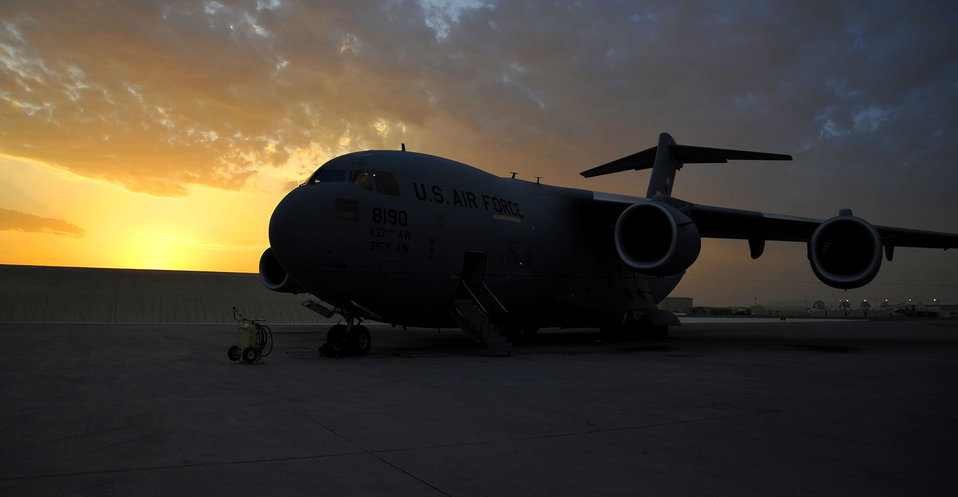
Daylight's break

A C-17 Globemaster III waits on the flightline before an air delivery mission at an air base in Southwest Asia Feb. 2, 2010.